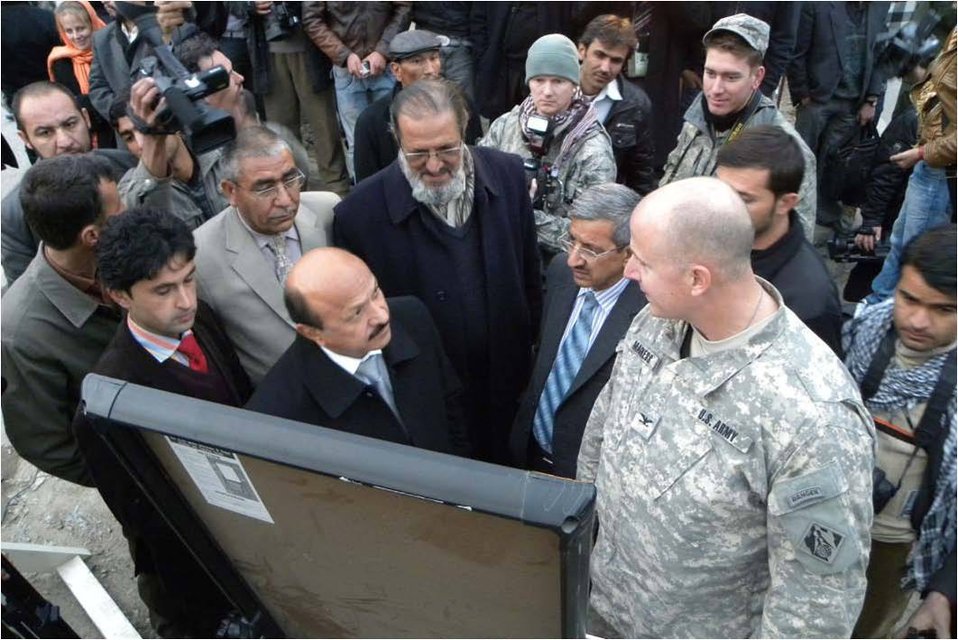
Mayor's office and Corps of Engineers open Kabul's streets to the night

KABUL, Afghanistan – Kabul Mayor Muhammad Yunus Nawandish, U.S. Ambassador Karl Eikenberry’s wife Ching Eikenberry, U.S. Army Col. Thomas Magness and other Afghan and U.S. officials flipped a switch at sunset to light up solar-powered streetlights on one of Kabul’s most important commercial corridors on Wednesday, Dec. 29.

The streetlight project is part of Nawandish’s “Open Kabul’s Streets to the Night” initiative. The goal is to boost economic development in downtown Kabul by creating a safer environment for nighttime commerce.

“A solar-light system like this is very important to light the streets,” the mayor said through an interpreter during a press conference under one of the streetlights near Jumhoriat National Specialized Hospital. “It is very important for people’s lives. The lights make security, the economy, everything much better,” he said.

Nawandish thanked the United States and the international community for helping to improve the quality of life in Kabul and throughout Afghanistan. The first 28 streetlights illuminate a nearly 1-kilometer stretch of Jumhoriat Road, which the officials noted is just the first phase of a larger project.

They announced that they are in the planning stages of expanding the program with streetlights along 4.4 kilometers of roads in two more phases in 2012. The proposed routes, distances, costs and schedule:

Phase 1 – Jumhoriat Road, from Jumhoriat National Specialized Hospital to Sherpoor traffic circle, 0.88 kilometers, completed.

Phase 2 – Foreign Affairs Road, from the Ministry of Foreign Affairs, connecting to Wazir Akbar Khan Road, past Wazir Akbar Khan Mosque, to Indira Gandhi Children’s Hospital, 2.05 kilometers, expected to be complete in 2012.

Phase 3 – Wazir Akbar Khan Road, from Indira Gandhi Children’s Hospital past Massoud and Shahid Abdul Haq traffic circles, to a point near Kabul Stadium, 2.35 kilometers, expected to be complete in 2012.

The first phase proved that solar-powered lights are a viable option for Kabul, a city that has an inadequate electric grid, said Magness, commander of the U.S. Army Corps of Engineers’ district in northern Afghanistan.

Much of the capitol city is dark at night following three decades of war that have crippled the city’s electrical grid. Each of the streetlights will generate its own power without drawing from Kabul’s overall power supply.

“We’re confident that we’ve identified a way ahead,” Magness said. “When you hear about the mayor’s vision of lighting up the city at night, you realize that renewable energy and this sustainable little effort here could amount to a lot.”

Ching Eikenberry, who is a member of a Kabul planning committee headed by the U.S. Agency for International Development, congratulated the mayor and members of his staff for working with the international community to develop the idea. “I am very, very grateful that I have this opportunity to witness the brightening of the city with my Afghan brothers and sisters,” she said.

Kevin Brownawell, the deputy mission director for the U.S. Agency for International Development, said the United States is committed to working with Nawandish to improve services for Kabul residents.